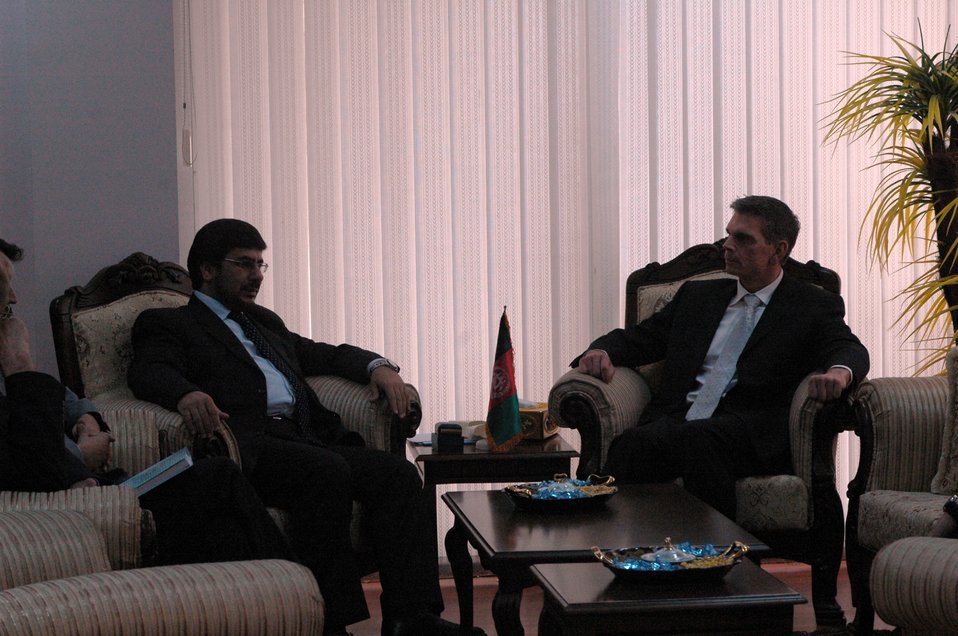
Community Based Stabilization Grants Ceremony, December 7, 2010